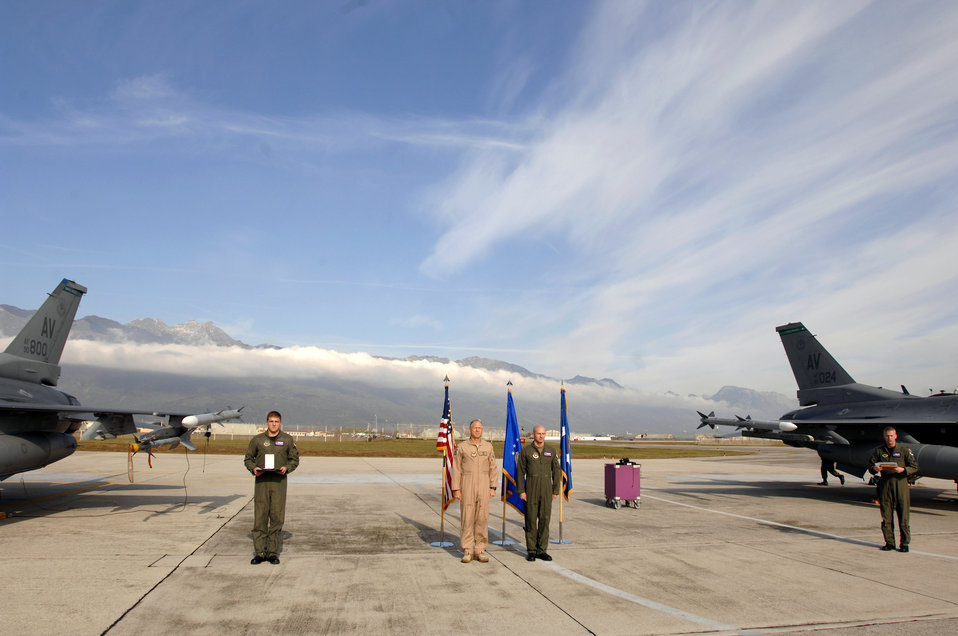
Father pins Distinguished Flying Cross on son

Capt. George Collings and his father and fellow F-16 pilot Maj. Gen. Michael Collings, the senior U.S. defense representative to Egypt, stand at attention during a Distinguished Flying Cross ceremony on the flightline Oct. 29. General Collings flew into Aviano Air Base, Italy, to present Capt. Collings with the medal for distinguishing himself by extraordinary achievement while participating in aerial flight as an F-16 pilot with the 510th Expeditionary Fighter Squadron based out of Balad Air Base, Iraq.